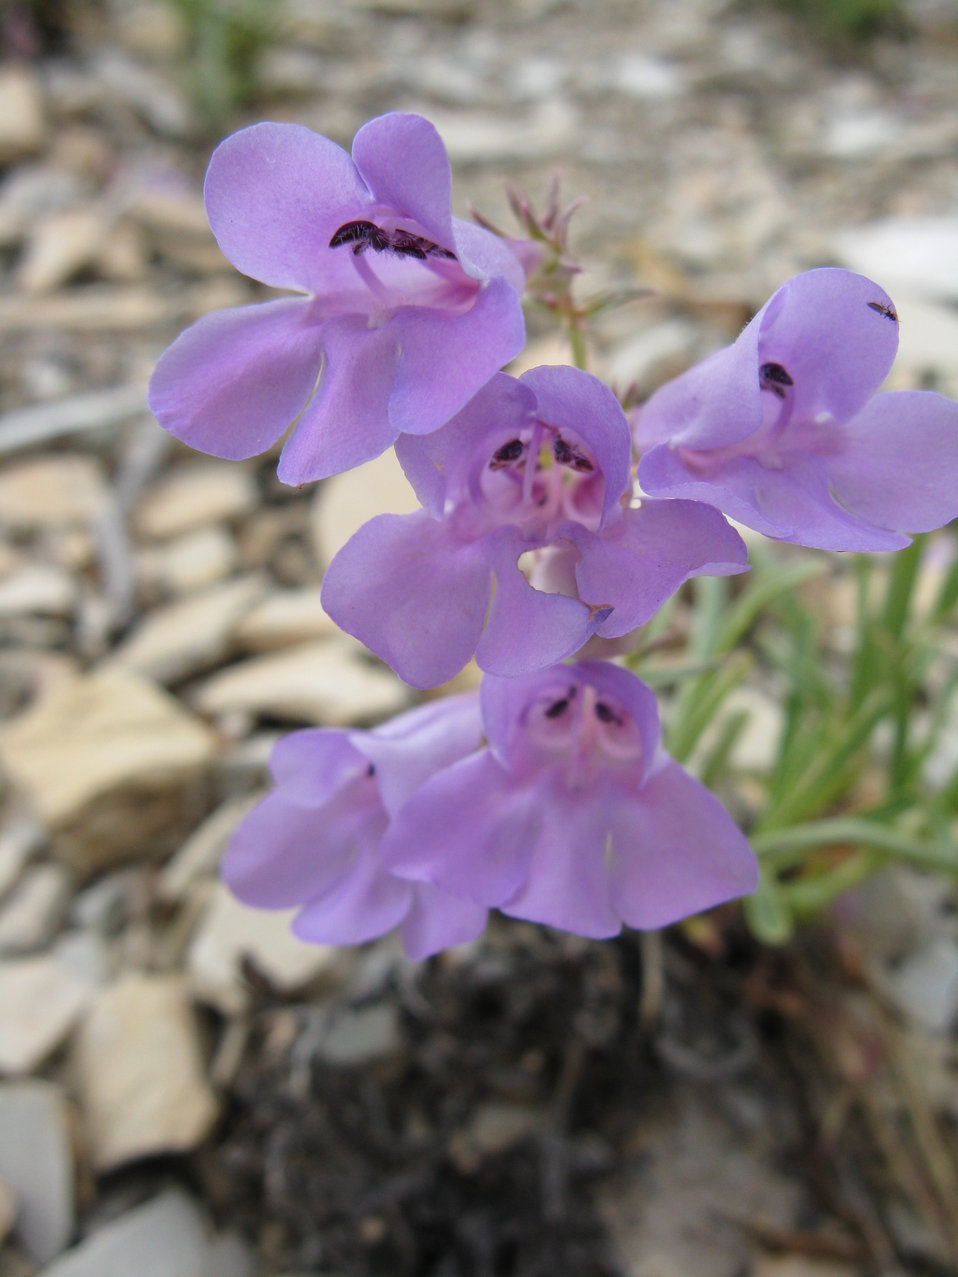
White River beardtongue (Penstemon scariosus var. albifluvis) is found only in the Uintah basin in Utah and Colorado. The species faces similar threats as Graham’s beardtongue (Penstemon grahamii) but may be more vulnerable due to its even smaller population sizes.